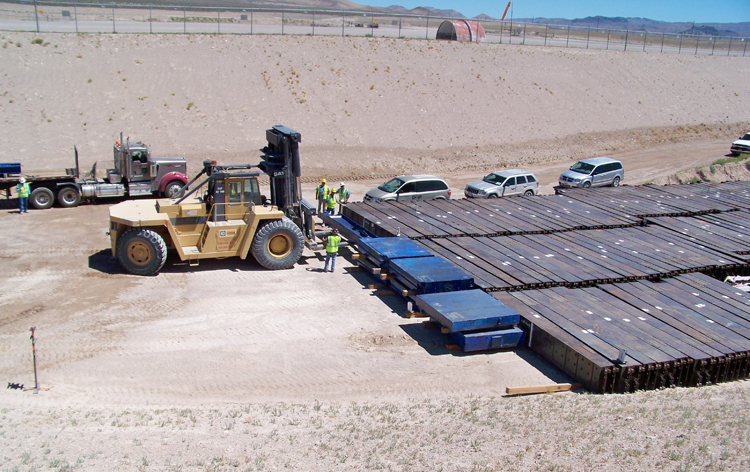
Waste Shipment

The Nevada Site Office ramped up disposal operations to allow for up to 318,000 cubic feet of low-level and mixed low-level waste per month at the Area 5 RWMS. The waste originates from eleven sites conducting remediation work, including the Nevada Test Site. This increased amount is nearly 90 percent more than the normal monthly volume that Area 5 Disposal Operations typically buries.